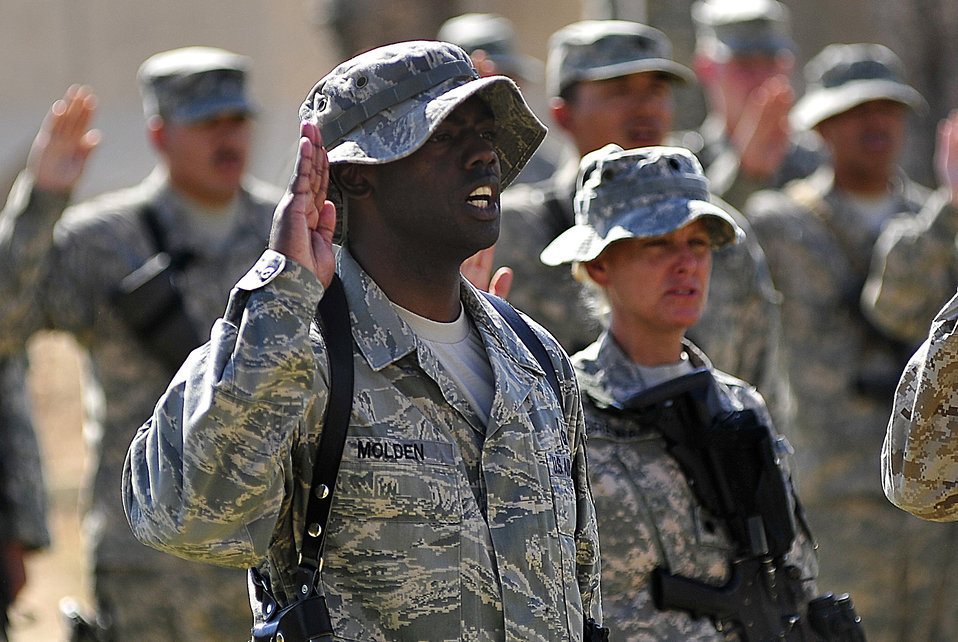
the oath

Tech. Sgt. LaMarcus Molden recites the oath of enlistment along with 125 other service members during a re-enlistment ceremony Oct. 5, 2011, at Al Asad Air Base, Iraq. Molden is a 9th Air and Space Expeditionary Task Force-Iraq personnel manager.